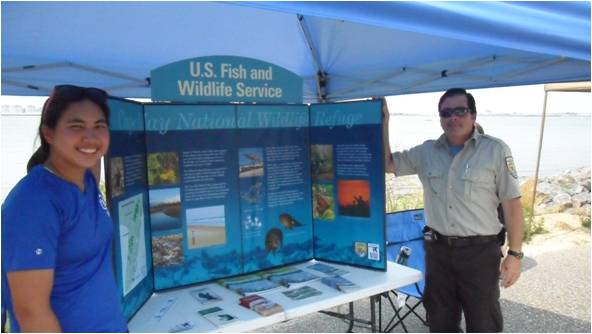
At a fair

A CDIP intern educated the public about Cape May National Wildlife Refuge.